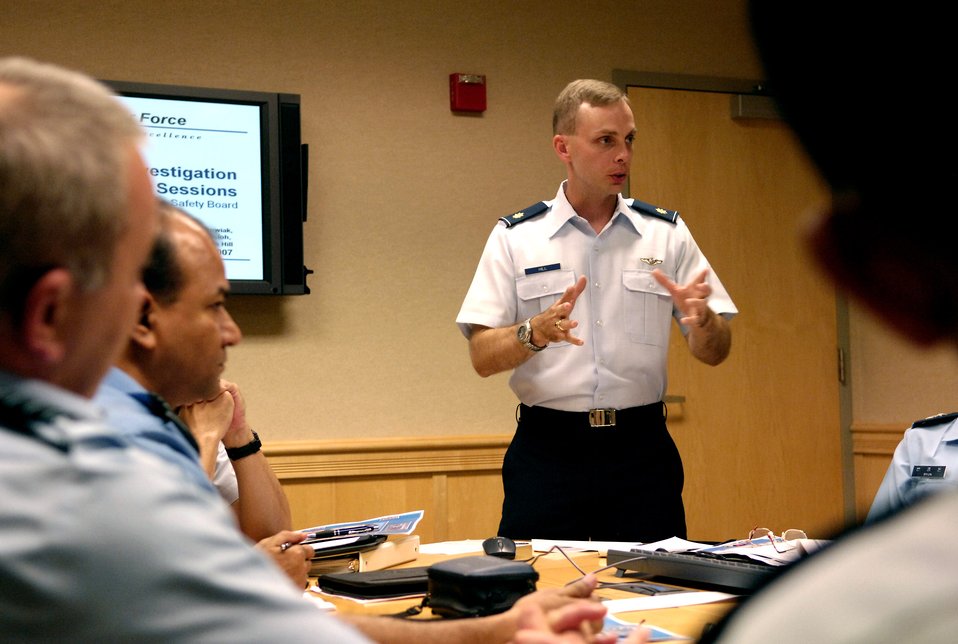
Communicating at PACRIM

Maj. James Hill discusses mishap investigation procedures with members of the Pacific Airpower Symposium Sept. 19 during a breakout session at the Aloha Conference Center at Hickam Air Force Base, Hawaii. The PACRIM Symposium provides a forum to communicate the value of U.S. engagement with nations of the Asia-Pacific region and the United States' commitment to the region to internal, local, national and regional audiences. Major Hill is from the 15th Airlift Wing Safety Office.